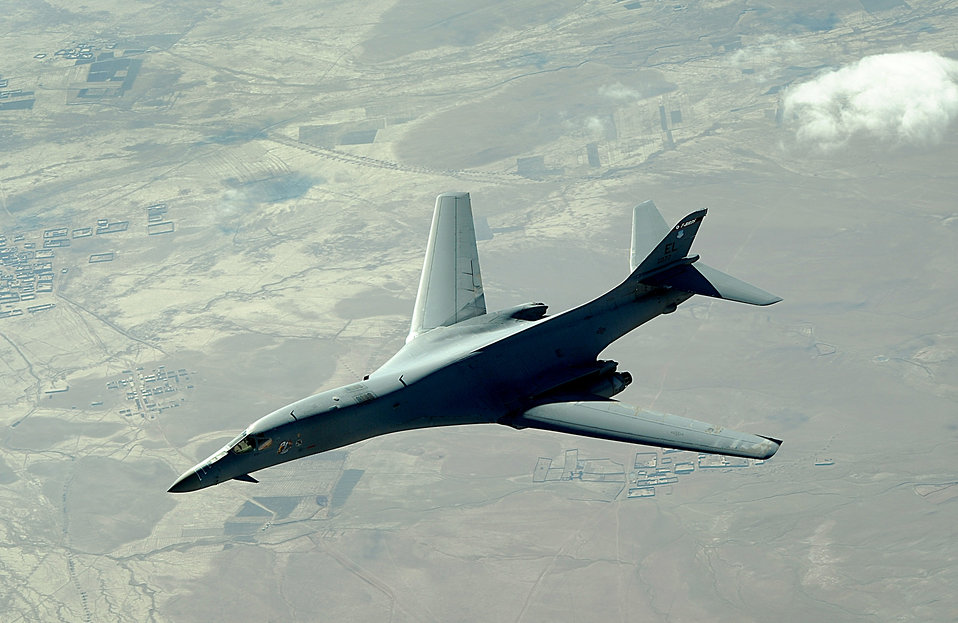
March 4 airpower summary: B-1B destroys drug production facilities

A B-1B Lancer flies a combat patrol mission over Afghanistan in support of Operation Enduring Freedom. The B-1B is assigned to the 34th Expeditionary Squadron and provides close-air support throughout Southwest Asia.